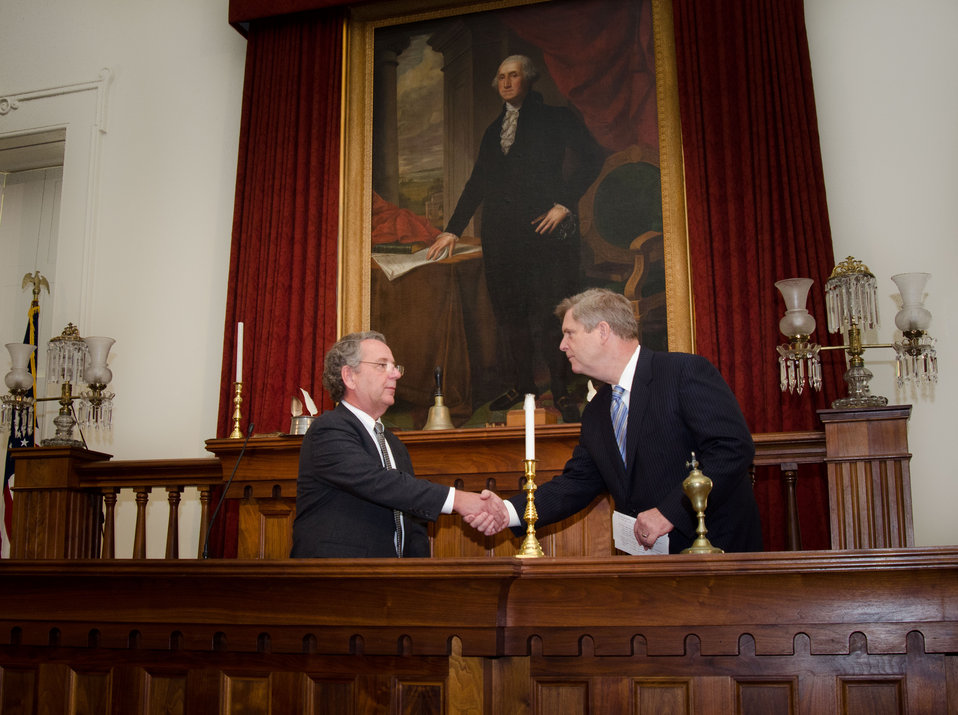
Illinois Department of Agriculture Director Jim Larkin (left) made opening remarks and introduced Agriculture Secretary Tom Vilsack (right) during the unveiling of the 150th Anniversary graphic at the Old State Capitol in Springfield, IL, to commemorate the creation of the U.S. Department of Agriculture on Wednesday, November 2, 2011.